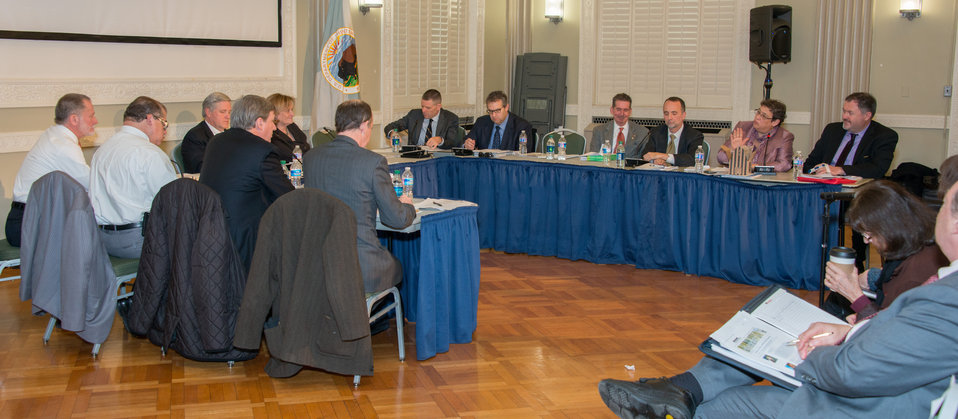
Public Meeting of Advisory Council on Wildlife Trafficking

The members of the Advisory Council on Wildlife Trafficking